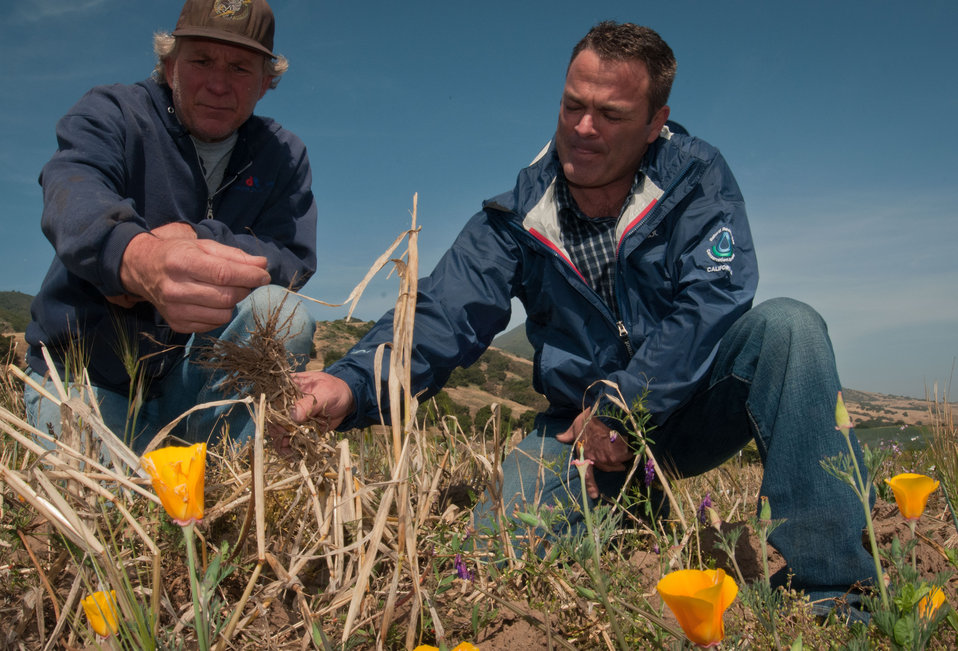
U.S. Department of Agriculture (USDA) Natural Resources Conservation Service (NRCS) Monterey County Conservationist Robert LaFleur (right) pull a hand full of rye so farmer Tom Heess (left) of Leafy Greens Farm can check the health of the roots at this Salinas Valley farm in California on Thursday, June 16, 2011.